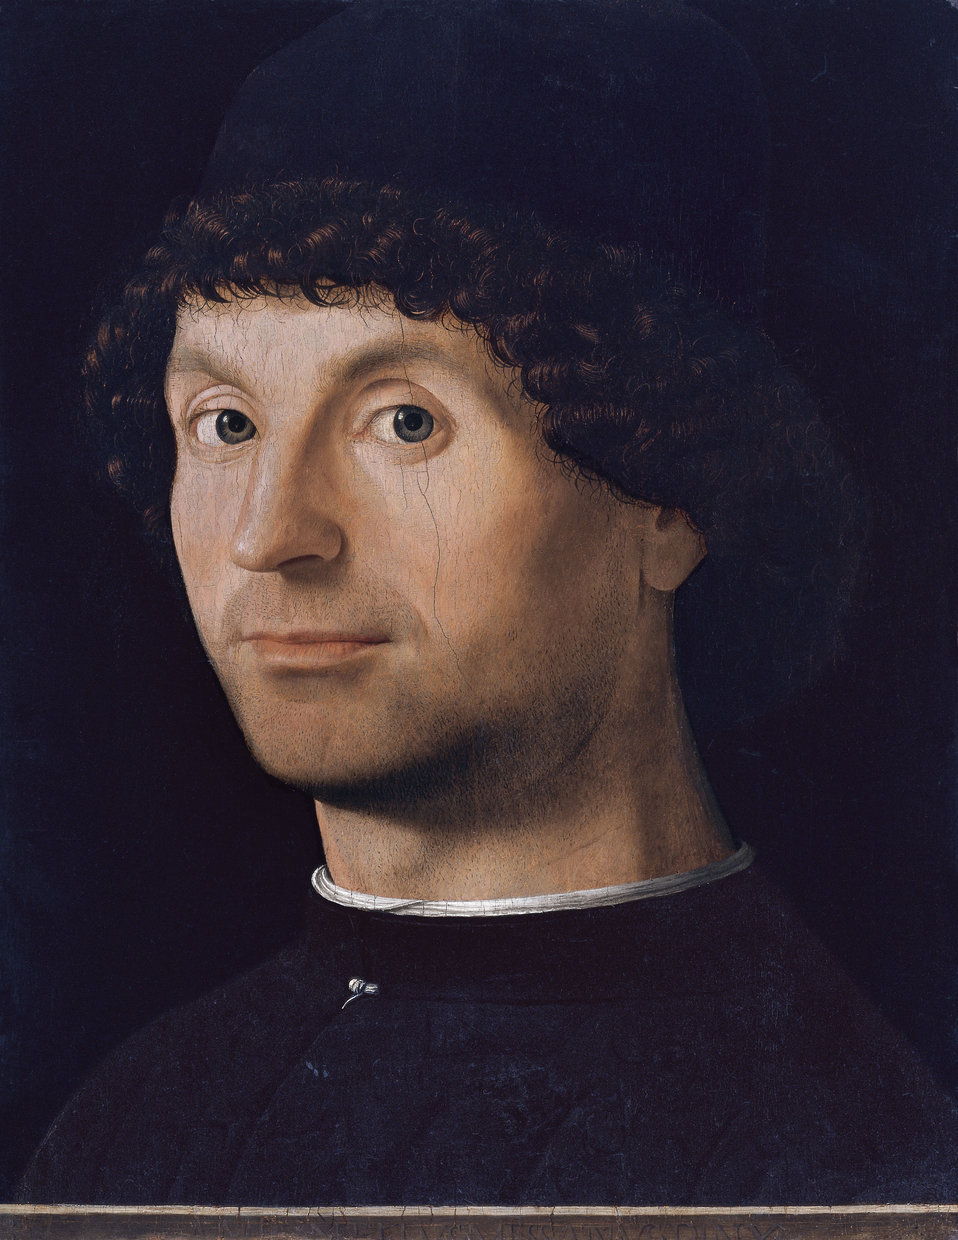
Antonello Da Messina - Retrato de un hombre